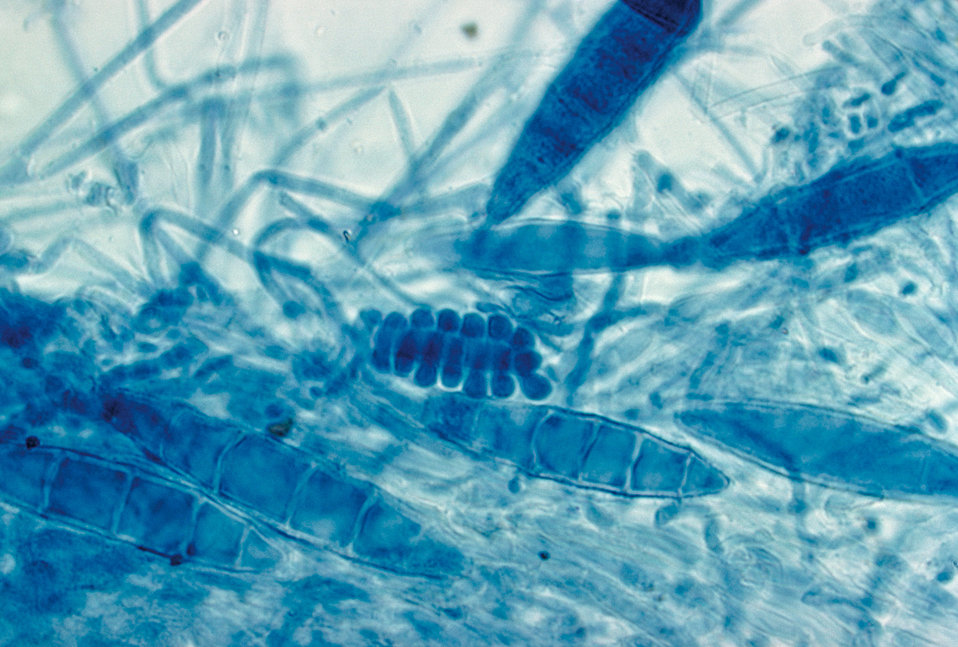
This image shows a cleistothecium of the fungus Arthroderma incurvatum .